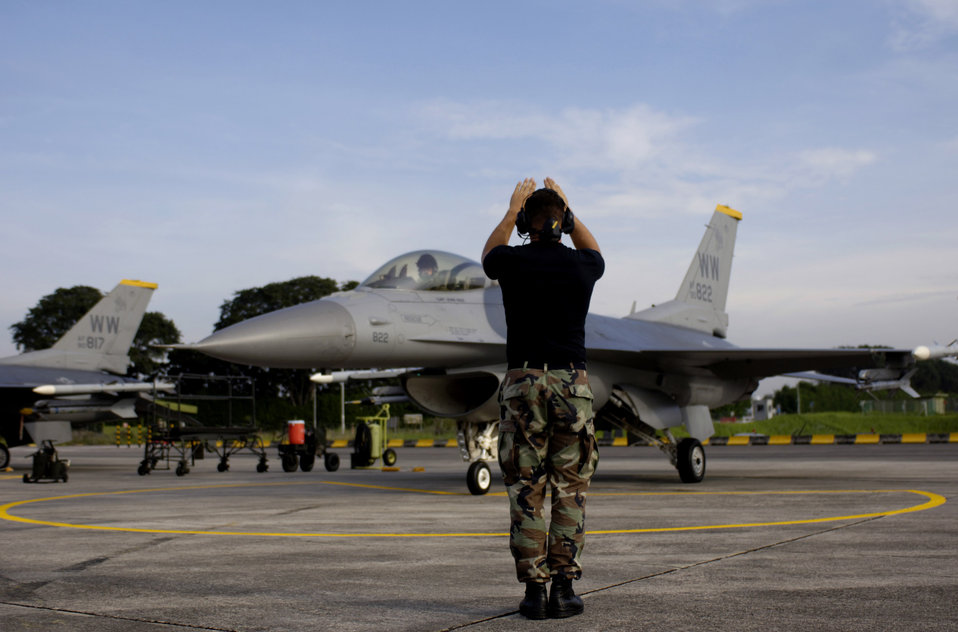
Commando Sling

PAYA LEBAR AIR BASE, Singapore -- Senior Airman Robert McFadden prepares to launch an F-16 Fighting Falcon for a mission here Nov. 9 during Exercise Commando Sling. The annual exercise began in 1990 to provide valuable combined air combat training for U.S. and Singapore Air Force fighter units. The exercise allows units to sharpen air combat skills, improve procedures for sustained operations at a non-U.S. base, and promote closer relations between the two air forces and nations. Airman McFadden is a crew chief from the 14th Figher Squadron at Misawa Air Base, Japan.